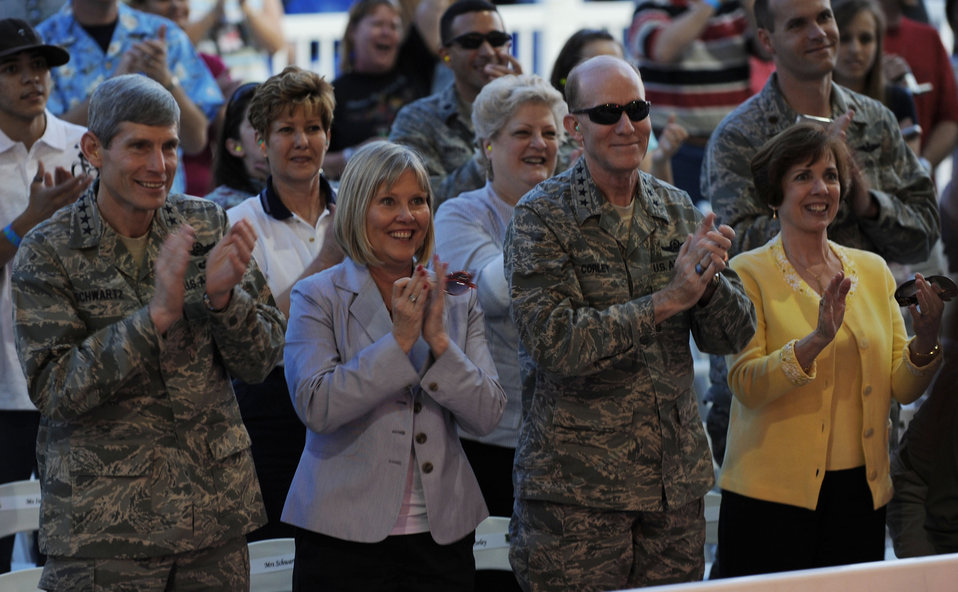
Airpower over Hampton Roads

Gen. Norton Schwartz (from left), Air Force chief of staff, his wife Suzie, Gen. John D.W. Corley, Air Combat Command commander, and his wife Alice, enjoy the Kentucky Head Hunters concert during the Airpower over Hampton Roads event April 24. The first evening of the air show at Langley Air Force Base, Va., kicked off with a live concert from the country band, followed by a night air show and fireworks.